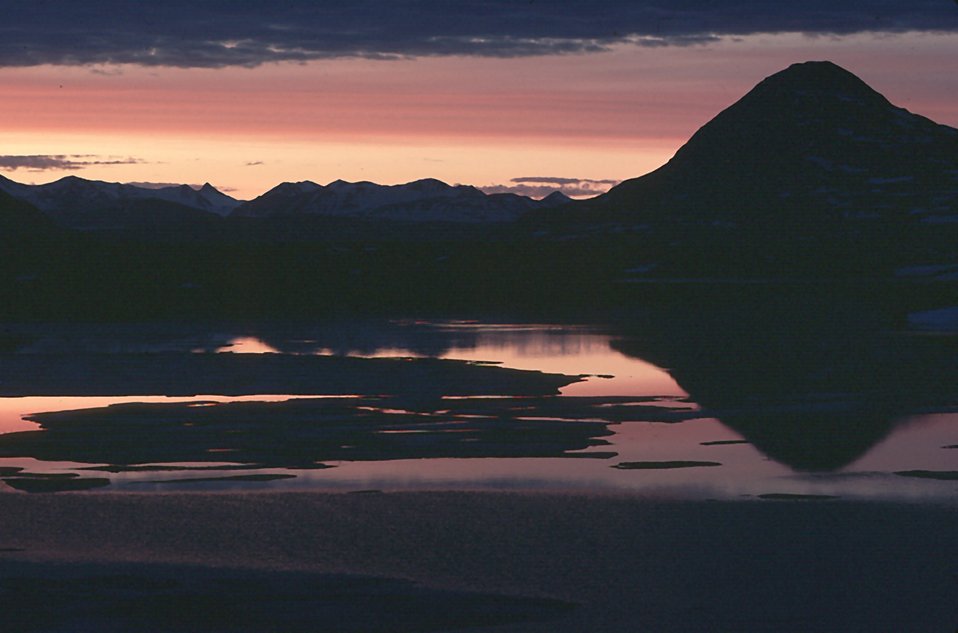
Sunset at Tangle Lakes, Denali Highway, Alaska